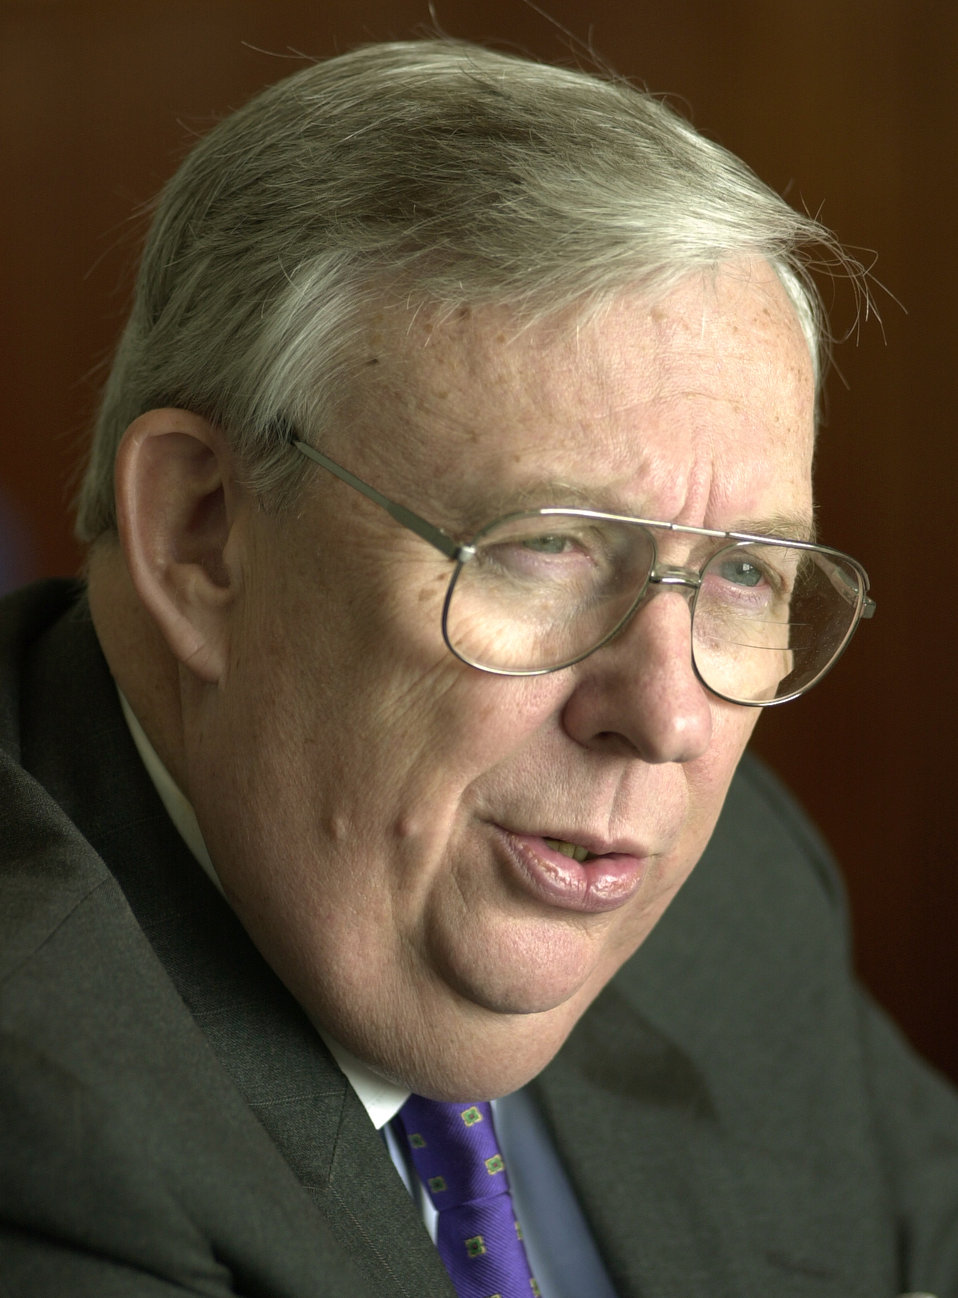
Secretary Roche submits letter of resignation

WASHINGTON -- Air Force Secretary Dr. James G. Roche submitted his resignation Nov. 16. Secretary Roche said he plans on leaving his position Jan. 20 or sooner if his successor is confirmed by the Senate by then. He has led the Air Force since 2001.